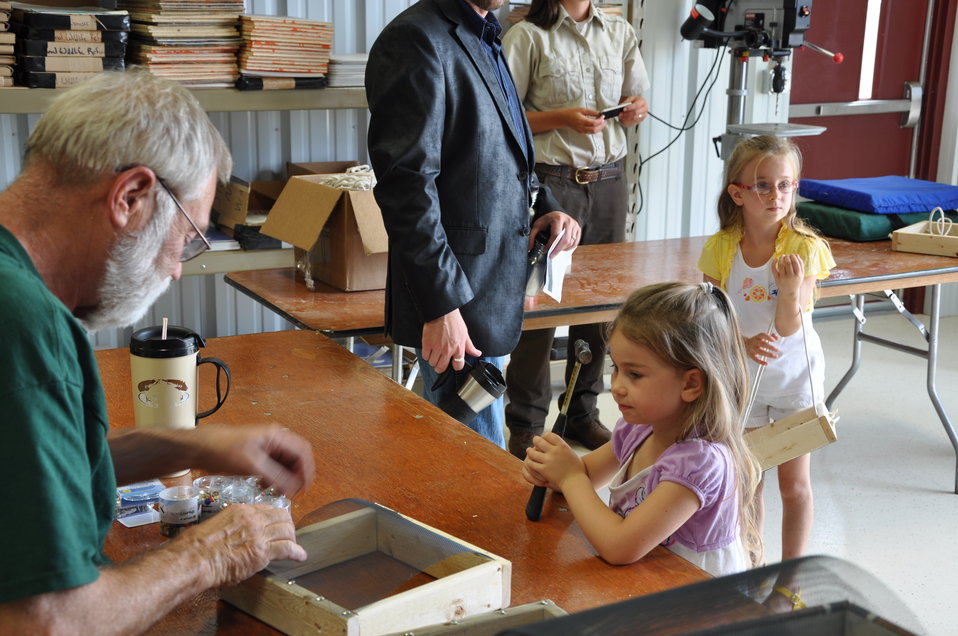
Building bird feeders